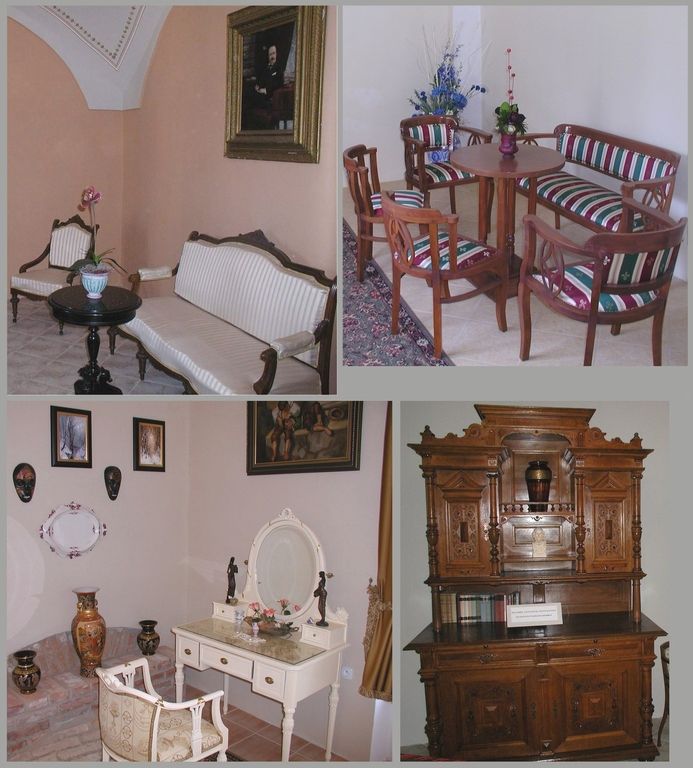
Expozícia historického nábytku Licencovanie: Autorom fotografie je Imrich Šimonek z Dubníka sk:Category:Dubník sk:Kategória:Presunúť na Commons